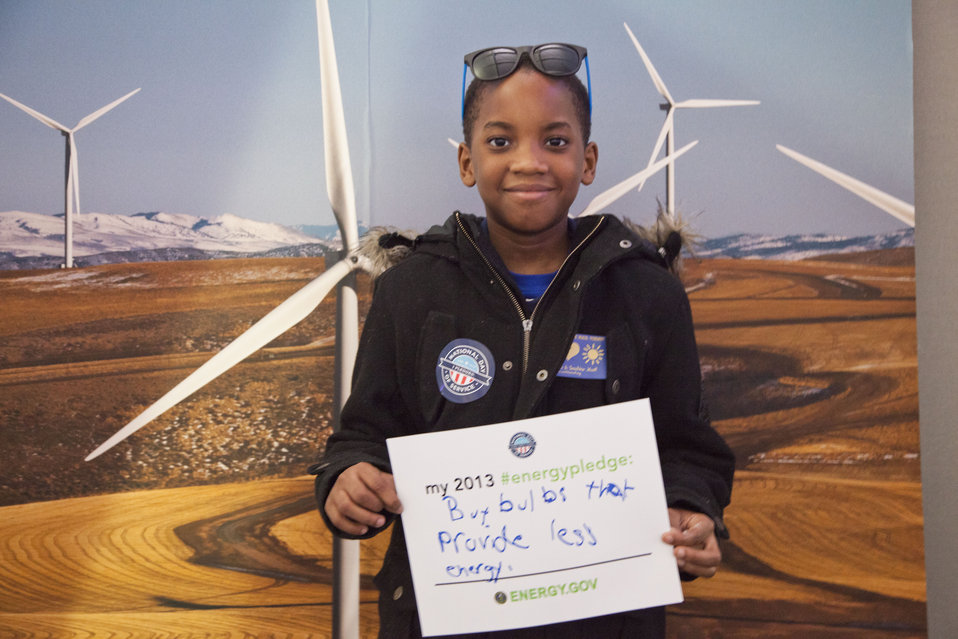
What's your #energypledge?